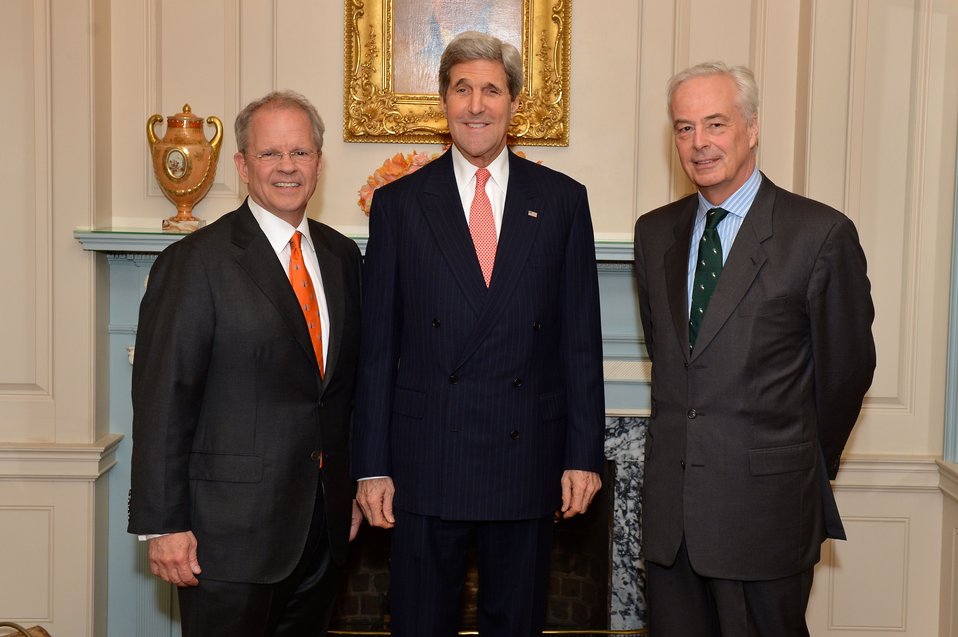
Secretary Kerry and Ambassadors Broas and Bekink Pose for a Photo

U.S. Secretary of State John Kerry, U.S. Ambassador to the Netherlands Tim Broas, and Dutch Ambassador to the U.S. Rudolf Simon Bekink pose for a photo at Ambassador Broas' swearing-in ceremony at the U.S. Department of State in Washington, D.C., on April 10, 2014.